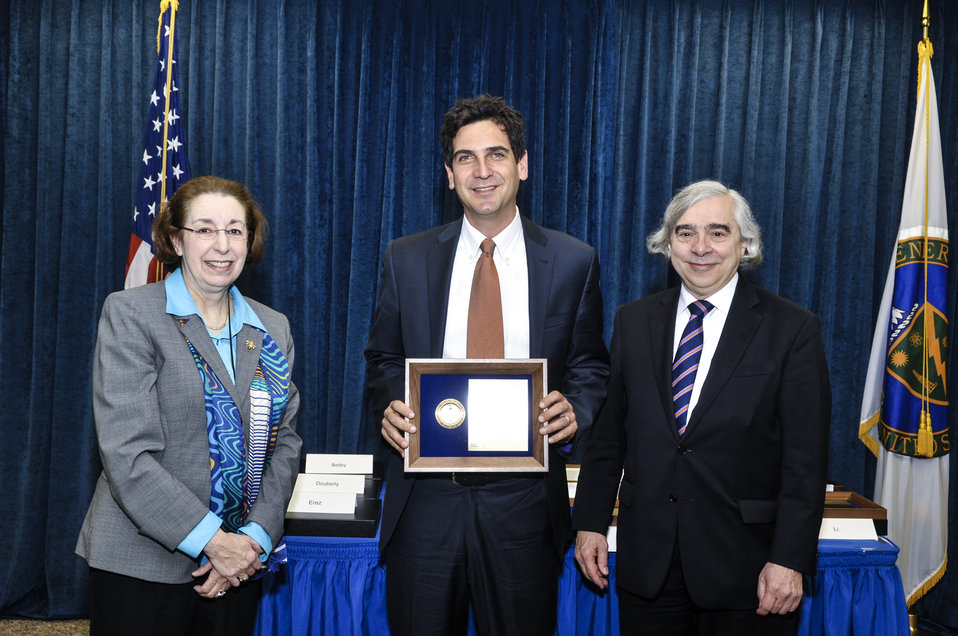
PECASE Awards: DOE Secretary E. Moniz with DOE Office of Science Acting Director Pat Dehmer, PECASE Awardee Daniel Kasen on April 14, 2014